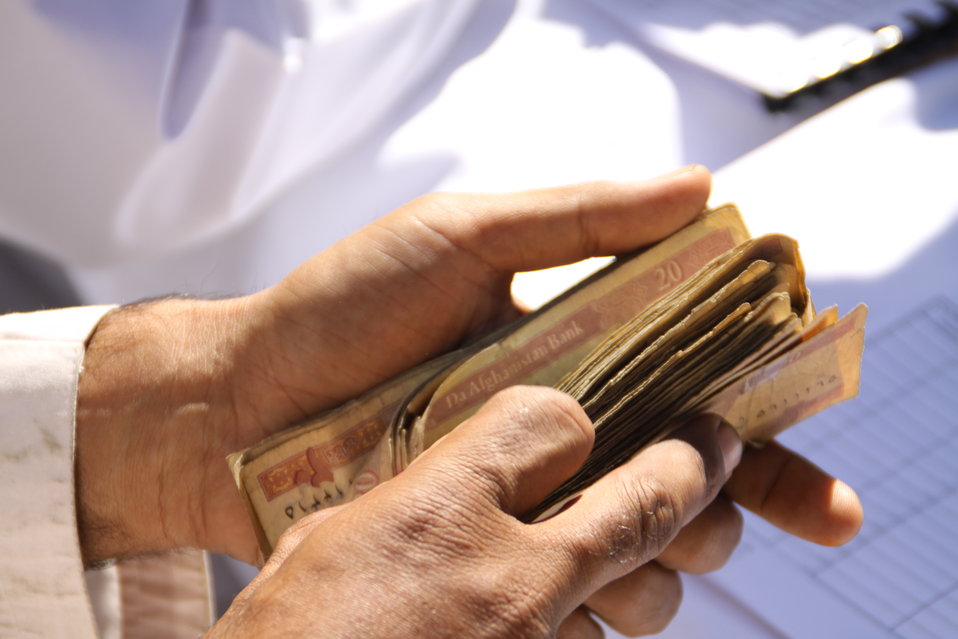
AVIPA Plus Wheat Seed Distribution 101005

US Ambassador Karl Eikenberry and USAID Acting Mission Director Kevin Brownawell joined the Minister of Agriculture, Irrigation and Livestock, H.E. Minister Mohammed Rahimi in signing a Memorandum of Understanding and distributing vouchers to area farmers for wheat and fertilizer.

US Ambassador Karl Eikenberry and USAID Acting Mission Director Kevin Brownawell joined the Minister of Agriculture, Irrigation and Livestock, H.E. Minister Mohammed Rahimi in signing a Memorandum of Understanding and distributing vouchers to area farmers for wheat and fertilizer.